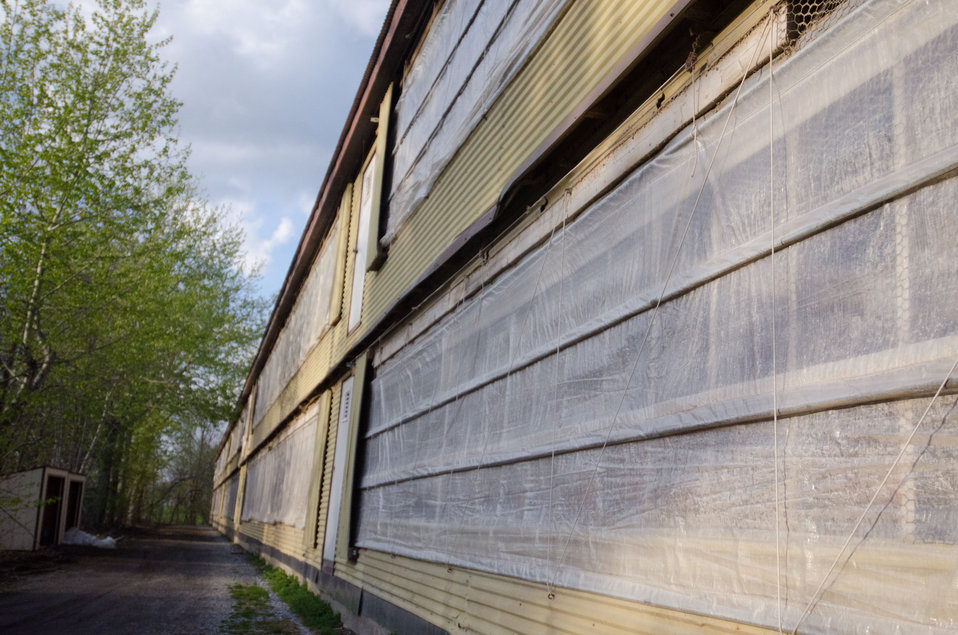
Two-story chicken house Seldom Rest Farms located, north of Myerstown, PA, on Wednesday, April 20, 2011. The farm raises crops, sheep and 17,000 hens. They produce approximately 2.5 million chicks each year. To supplement their electrical needs, they chose a contractor who knew about United States Department of Agriculture (USDA) Rural Energy for America program (REAP) grants and helped them through the application process. The farm was awarded a $152,000 grant (25% of the cost). to install the 1001kW solar array to power their farm, a neighboring farm and homes on the local electrical grid. The 240 solar panels were ground mounted with 5-foot clearance underneath to allow sheep to graze and rest underneath protected from the rain, sun or snowfall. Ten inverters change the DC electrical energy from the panels into AC energy that goes into the local power grid. Spring statistics show it is producing more than expected. REAP offers grants and/or loan guarantees for the purchase and installation of renewable energy generating systems and for energy efficiency improvements.